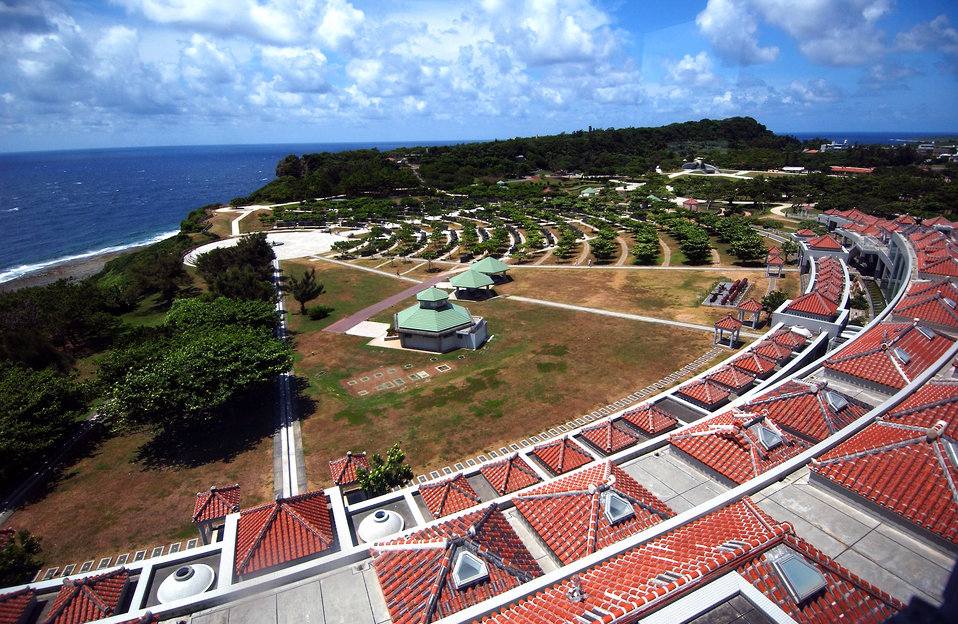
The Battle of Okinawa memorial

Peace Prayer Park, located in Itoman City, Japan, has 94 wall segments dedicated to Americans and Europeans who died during the Battle of Okinawa more than 60 years ago.